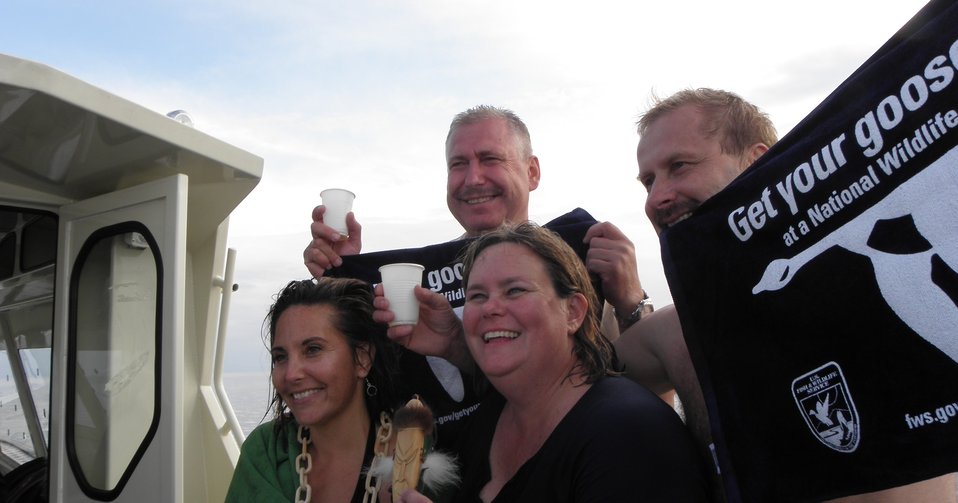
Get Your Goose On! - Russia Style

Taken at Lake Baikal during a USFWS trip to Russia.